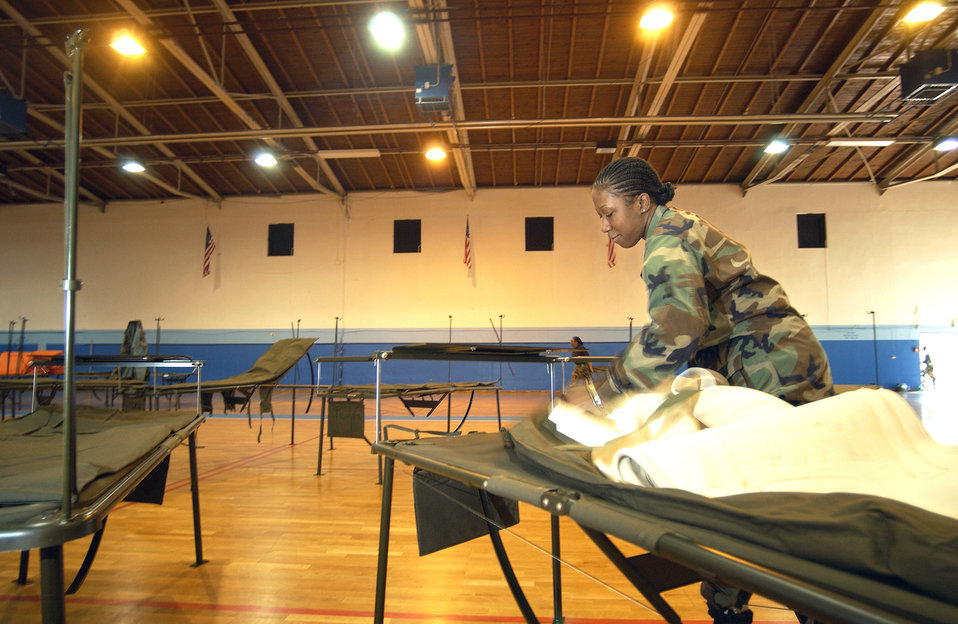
Garland

RAMSTEIN AIR BASE, Germany -- Reserve Capt. Gail Garland, a certified registered intensive care nurse with the 514th Air Evacuation Staging Squadron, McGuire Air Force Base, N.J., assembles one of many field litter beds inside Ramstein's gym.